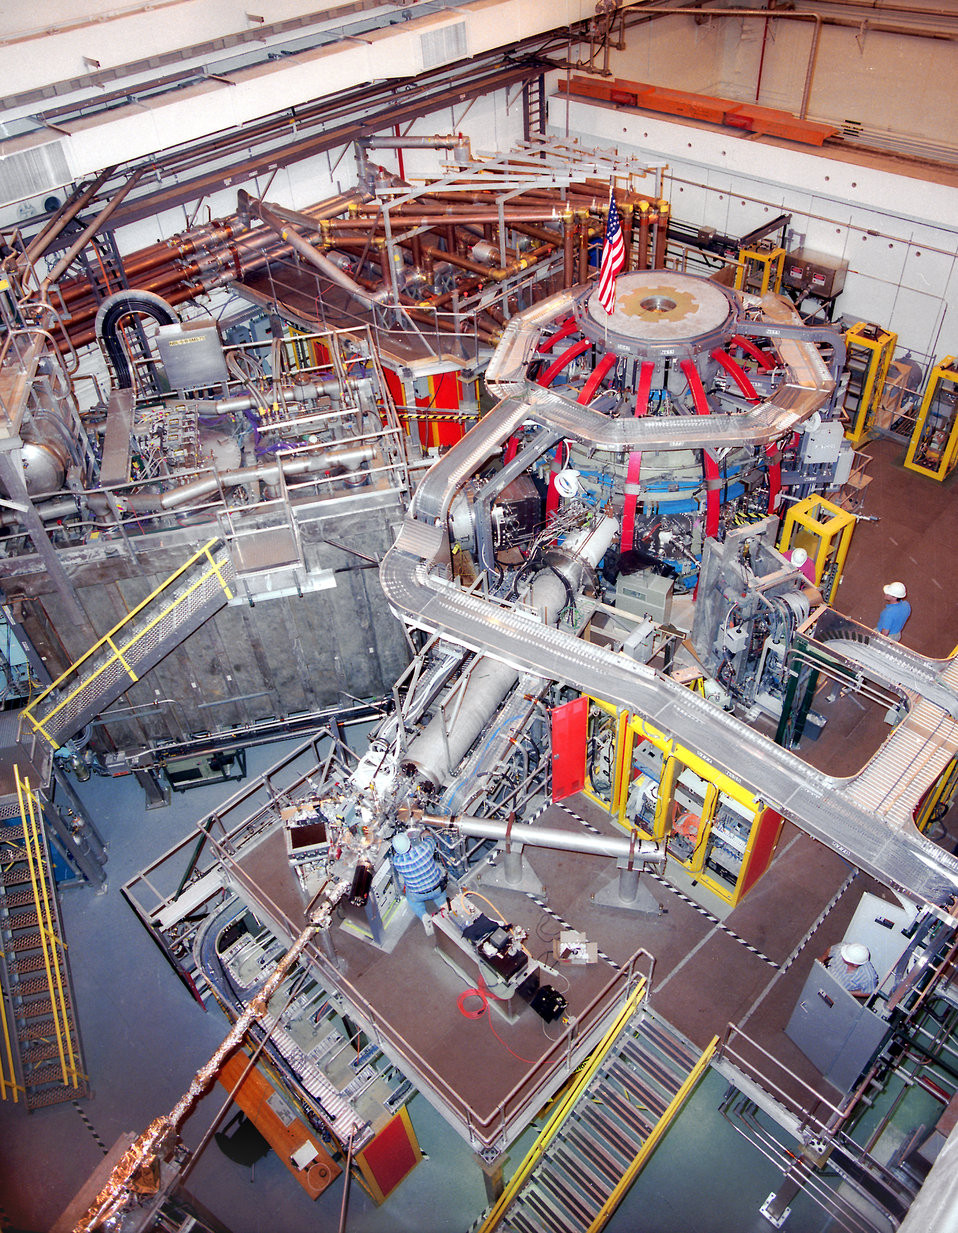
THE NATIONAL SPHERICAL TORUS EXPERIMENT.

The National Spherical Torus Experiments is an innovative magnetic fusion device that was constructed the Princeton Plasma Physics in collaboration with the Oak Ridge National Lab, Columbia University and the University of Washington at Seattle. NSTX will be used to study the physics principles of spherically shaped plasmas-hot ionized gases which nuclear fusion will occur under the appropriate conditions of temperature, density, and confinement in a magnetic field.